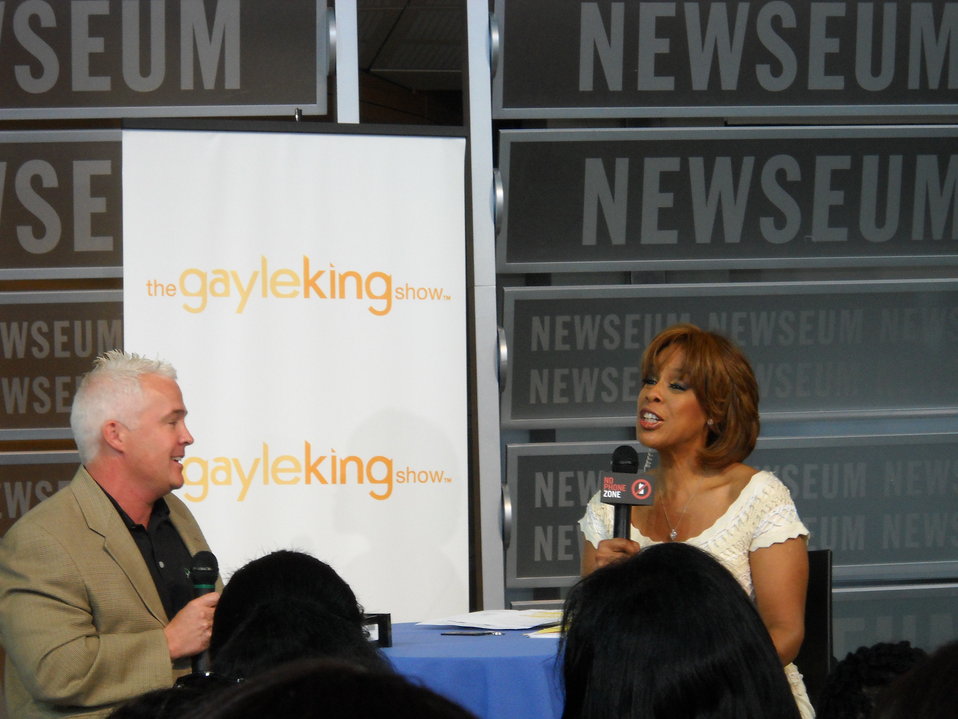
National No Phone Zone Day Newsum Washington, DC April 30, 2010 015